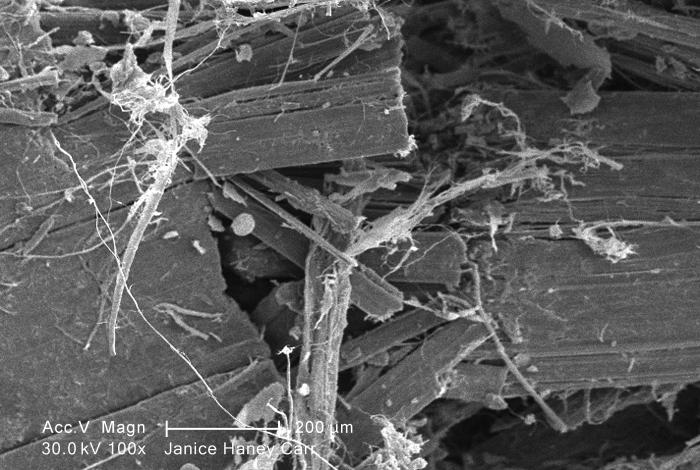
Under a low magnification of 100X, this scanning electron micrograph (SEM) revealed some of the microcrystalline ultrastructure exhibited by a piece of raw chrysotile, or white asbestos, which had been excavated from the Lowell Asbestos Mine on Belvidere Mountain, Vermont.